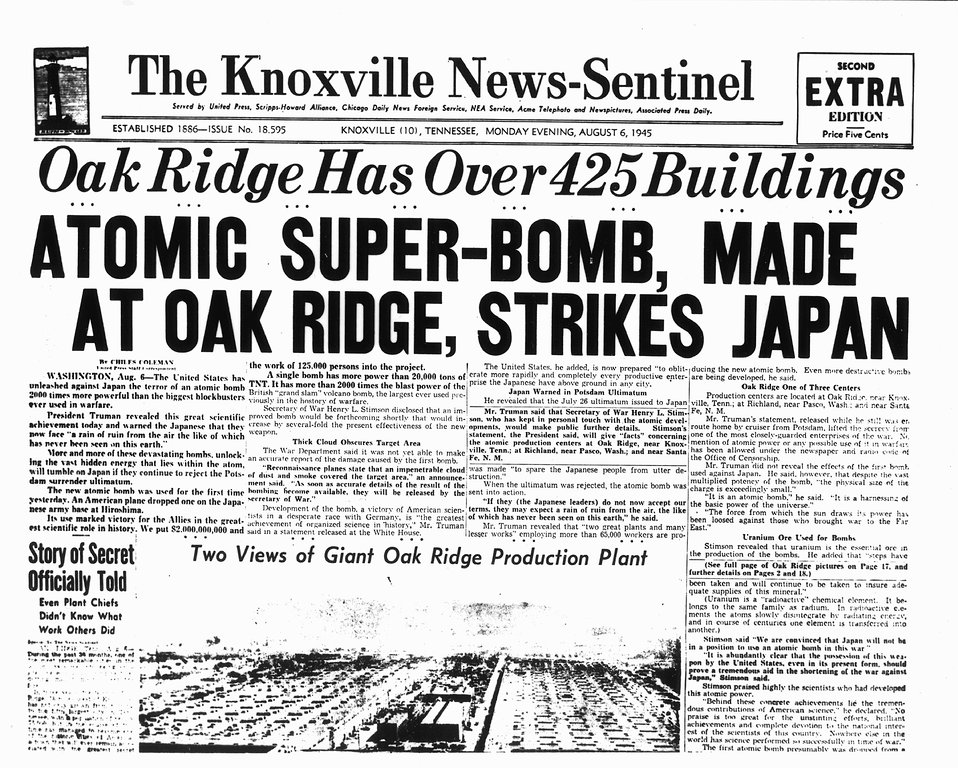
The Knoxville News-Sentinel headlines. c. August 6, 1945